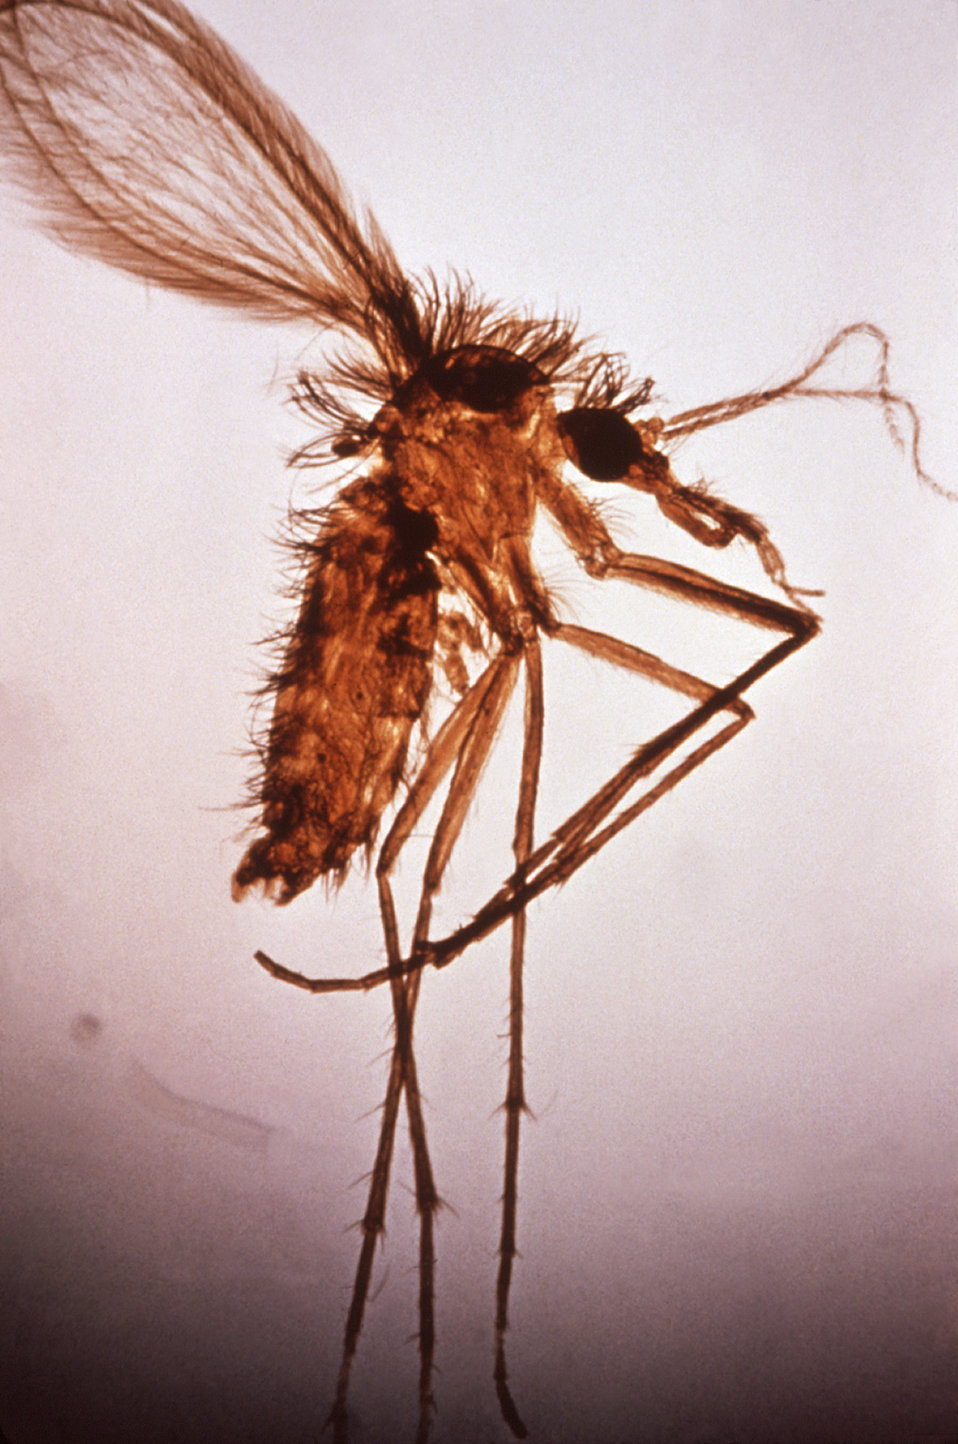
This image depicts a mounted female Phlebotomus sp. fly, which due to its resemblance, may be mistaken for a mosquito.